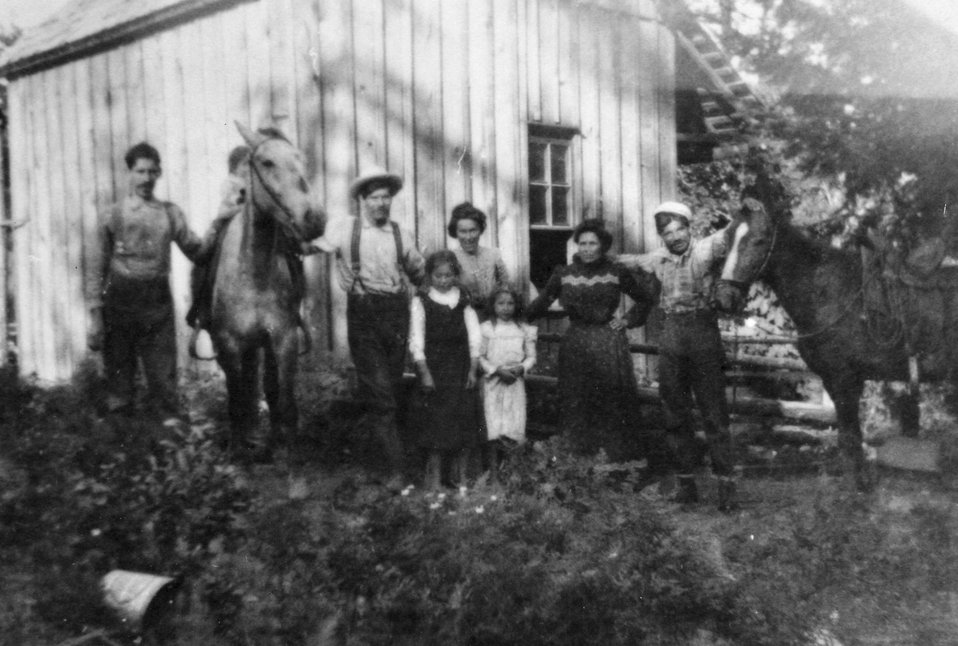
Tom and Anna Billings on right. Marial and older child.